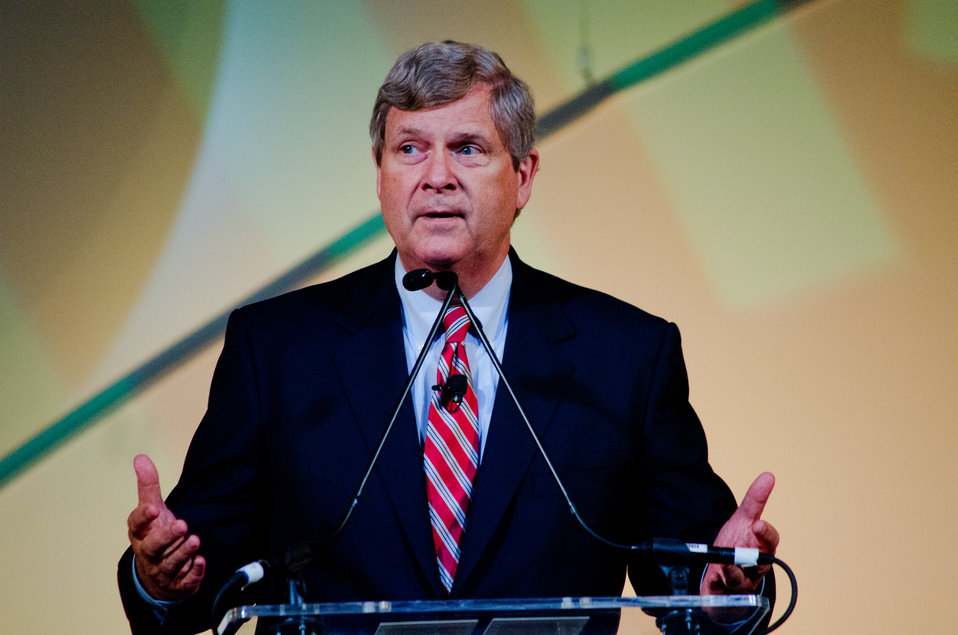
Agriculture Secretary Tom Vilsack speaks at the 84th Annual League of United Latin American Citizens (LULAC) National Convention and Exposition in Las Vegas, NV on Wednesday, Jun. 20, 2013.